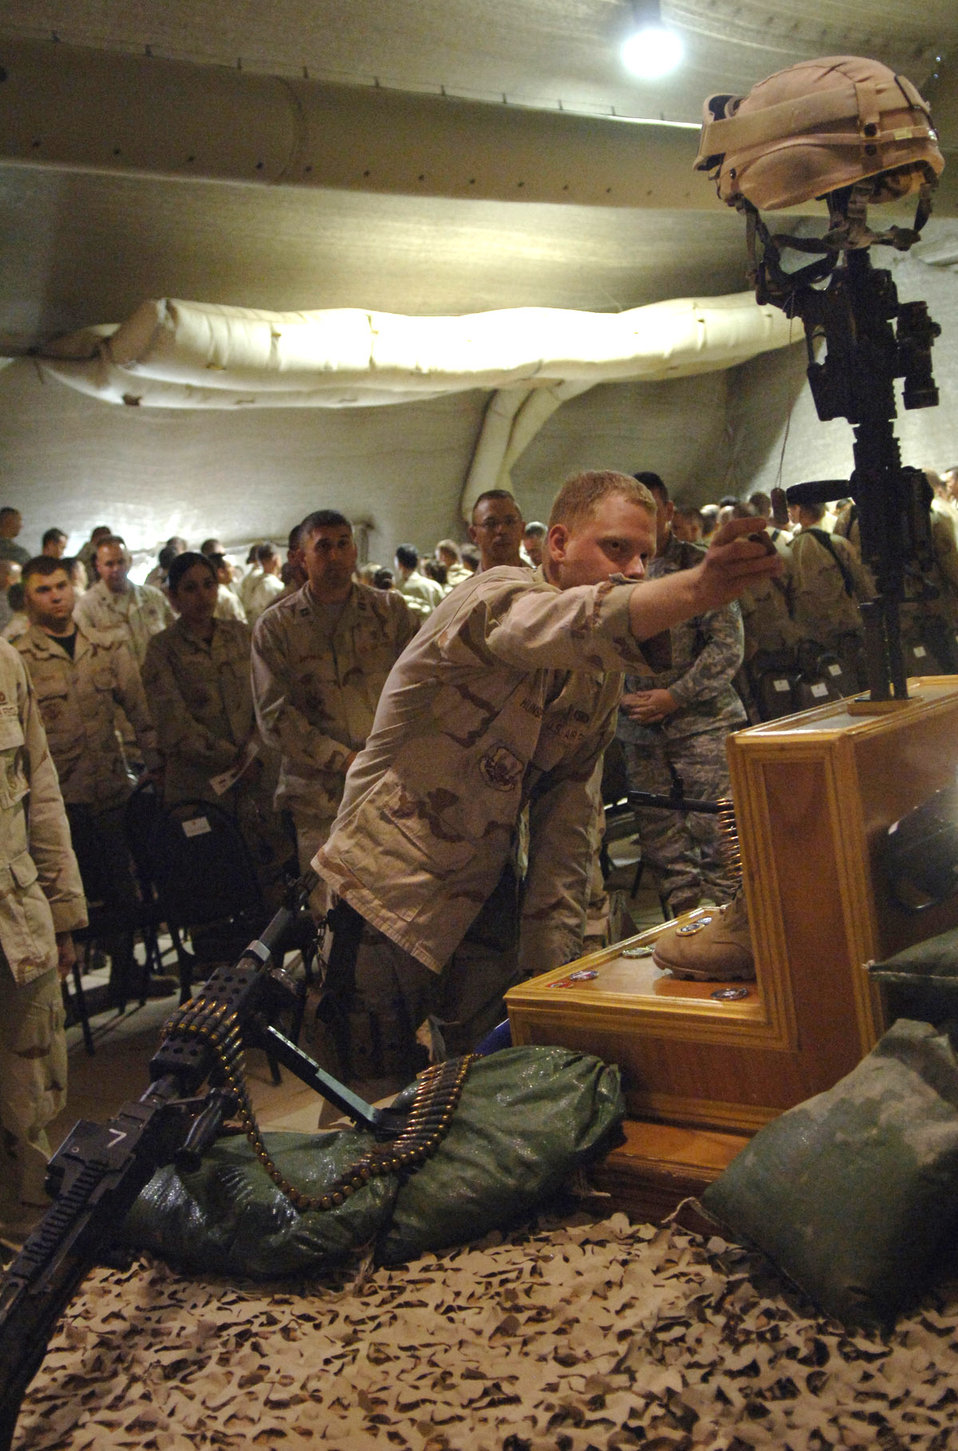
Balad Airmen say goodbye to fallen warrior

Senior Airman Daniel Hunsperger says goodbye to his supervisor, Staff Sgt. John T. Self, during a May 18 memorial ceremony in the town hall at Balad Air Base, Iraq. Sergeant Self died during combat operations May 14 in the Baghdad area. Airman Hunsperger is with Det. 3, 332nd Expeditionary Security Forces Squadron.